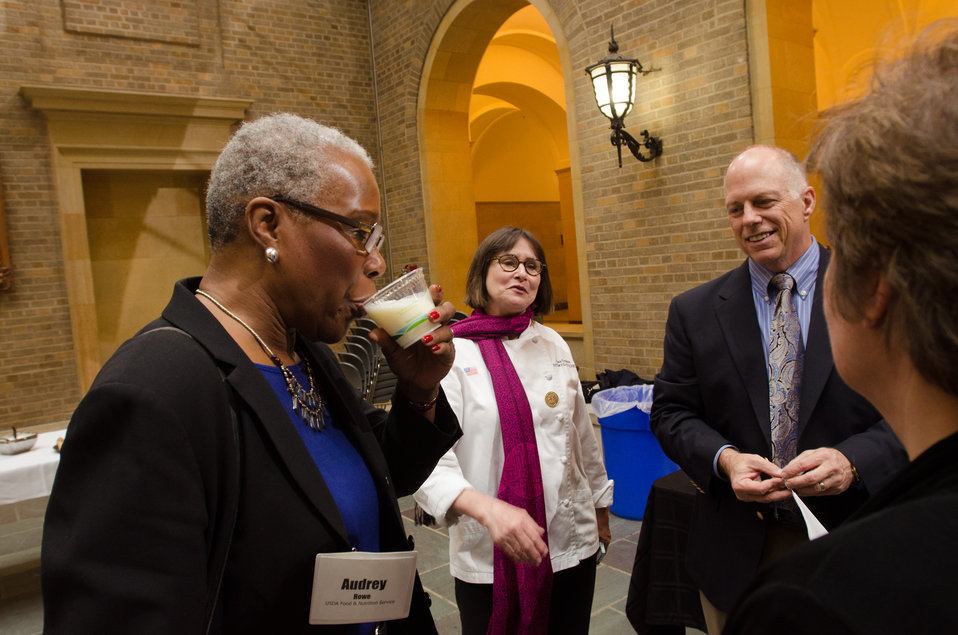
U.S. Department of Agriculture (USDA) Food and Nutrition Service (FNS) Administrator Audrey Rowe tastes extended shelf life milk that The Good Cow Company provided from Fair Oaks Farms at a luncheon at the Whitten Building Patio, in Washington, D.C. on Tuesday, Feb. 26, 2013. USDA FNS Administrator Rowe made remarks to the National Dairy Council Board of Directors Meeting earlier in the day.